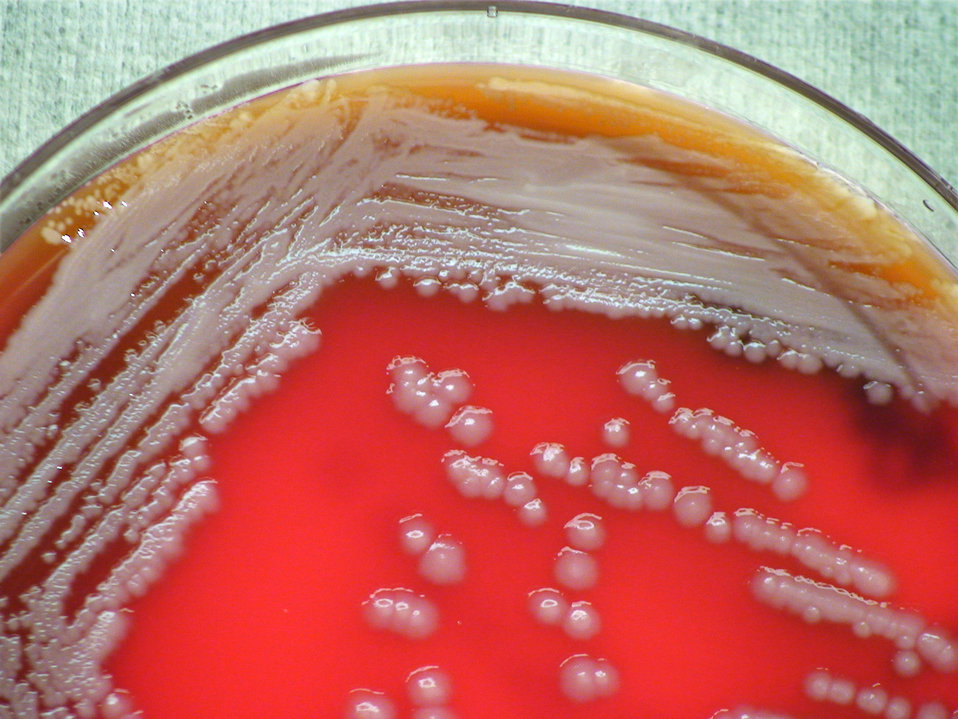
A closer view of PHIL 12401, this photograph depicts the colonial morphology displayed by Gram-negative Burkholderia thailandensis bacteria, which was grown on a medium of sheep's blood agar (SBA), for a 48 hour time period, at a temperature of 37�C. Also, see both PHIL 12408 and 12409, for views of this bacterial specie, grown on the same medium, for the same amount of time, however, at a greater temperature of 42�C. PHIL 12423 and 12424 display B. thailandensis colonial growth on the same medium, and temperature, but for only half the time (24hr). Finally, PHIL 12431 and 12432 display this specie's bacterial growth, again on SBA, for half the time (24hr), and at a greater temperature (42�C).